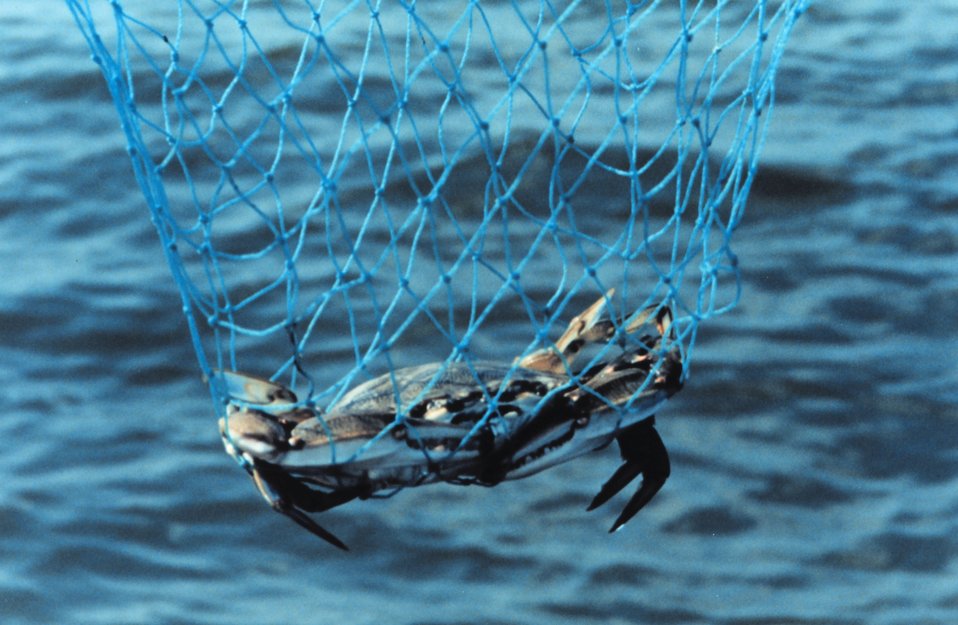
A Maryland Blue Crab, Callinectes sapidus, caught in a hand net.